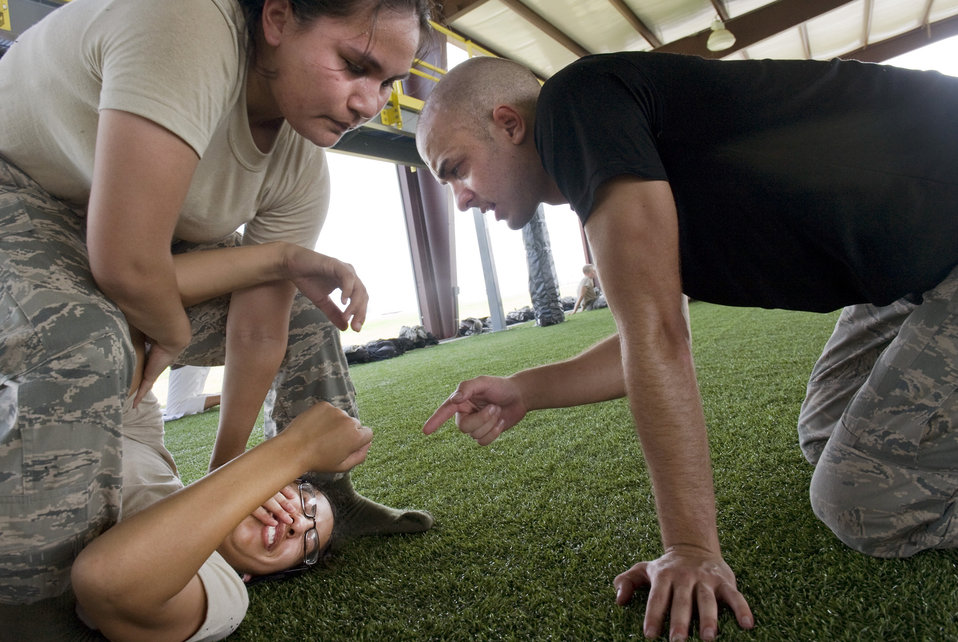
Instructors teach ROTC cadets defense techniques

An instructor walks a ROTC cadet through the process of performing an arm bar on another cadet July 22, 2010, at Maxwell Air Force Base, Ala. The cadets learned extensive techniques and skills that will help them defend themselves in combat situations.